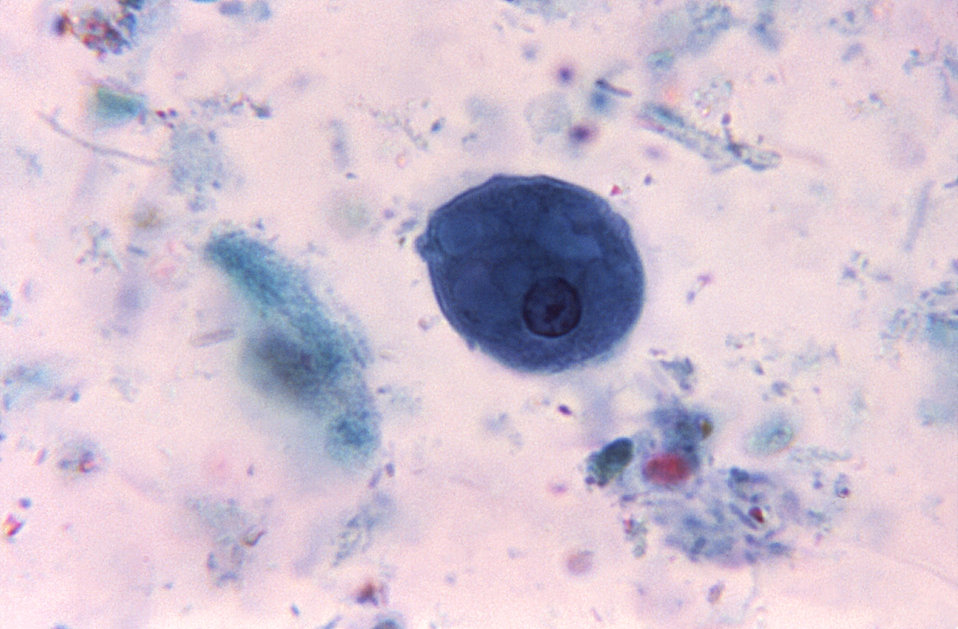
Magnified 1125X, this photomicrograph revealed the presence of a "typical" parasitic Entamoeba coli trophozoite. The trophozoites of E. coli measure usually 20�m - 25�m, but they can be elongated and reach up to 50�m. The trophozoites each have one nucleus with a characteristically large, eccentric karyosome and coarse, irregular peripheral chromatin. The cytoplasm is coarse and vacuolated ("dirty" cytoplasm).